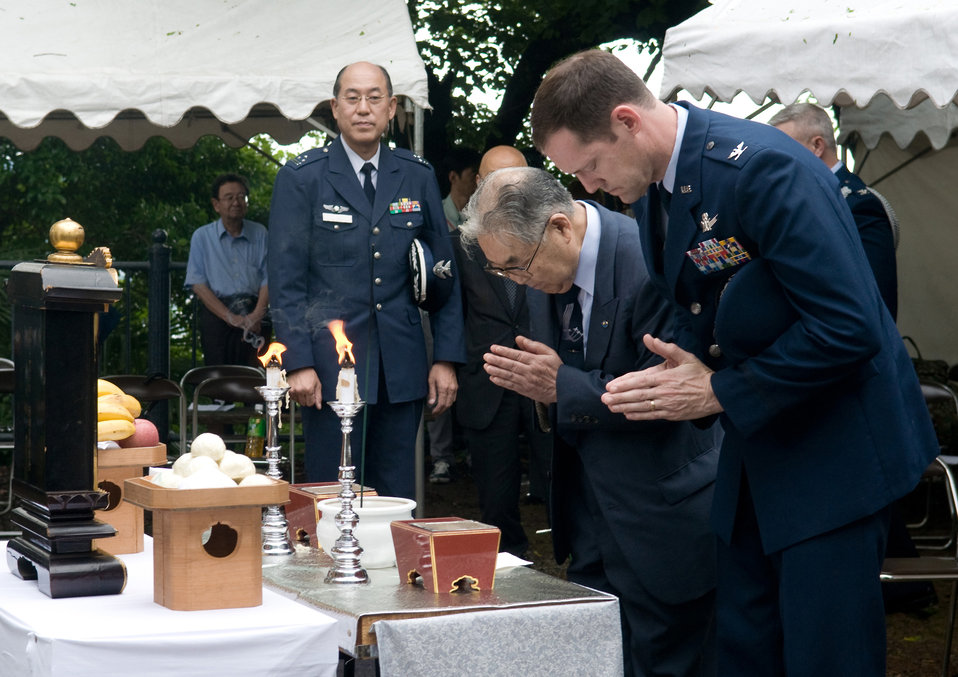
Annual WWII memorial service

Col. Todd Freece (right), and Dr. Hiroya Sugano participate in a World War II memorial ceremony June 11, 2011, in Shizuoka City, Japan. U.S. Airmen have been invited to take part in the event each year since 1972, bringing the U.S. and Japanese communities together to mourn a shared loss. Colonel Freece is the commander of the 374th Mission Support Group at Yokota Air Base, Japan. Dr. Sugano is the host of the annual ceremony.